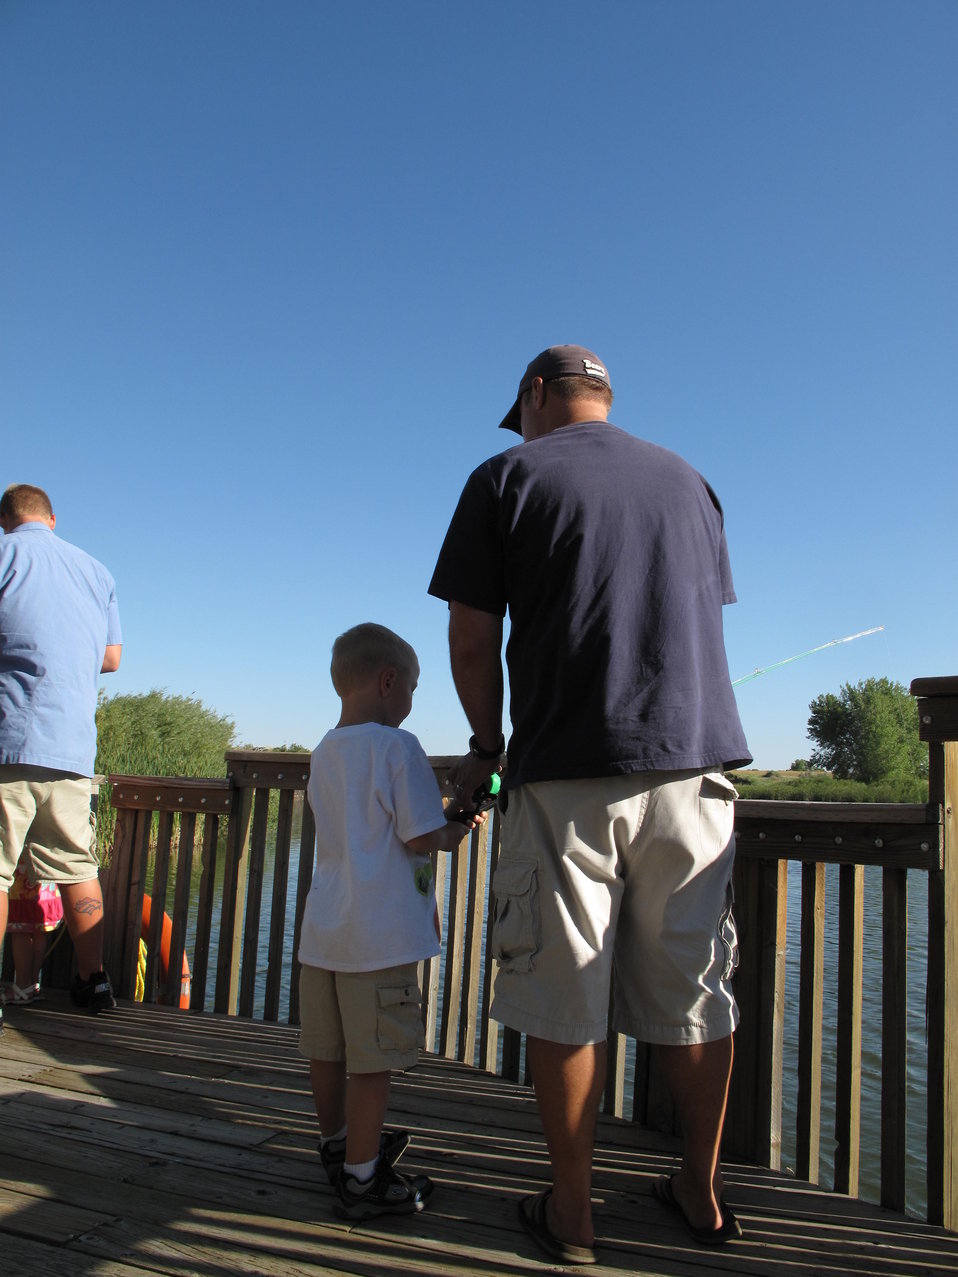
ELK fishing trip to RM Arsenal